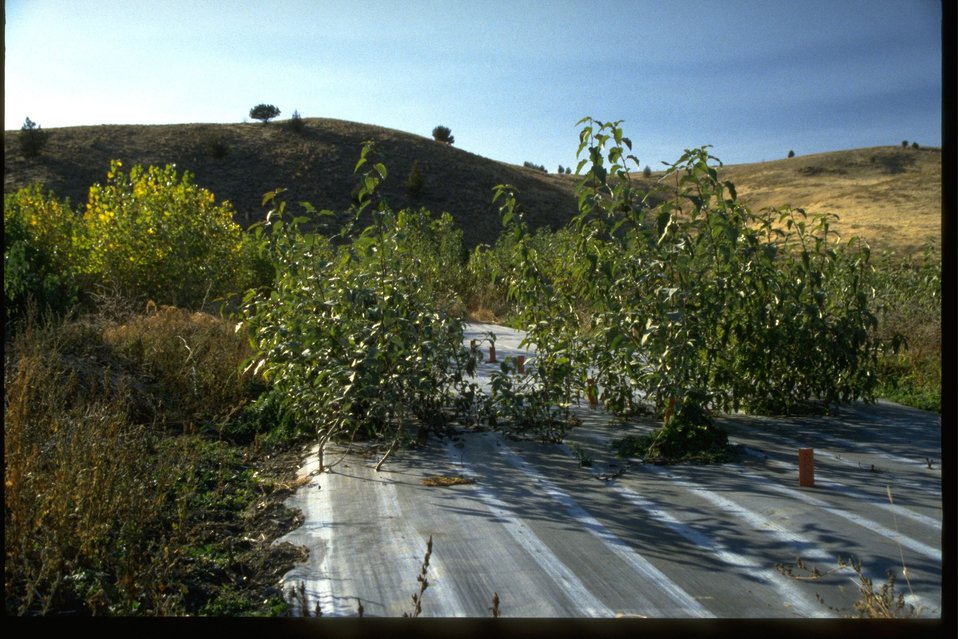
Cottonwood plantation near Clarno Road. Ground cloth under trees.